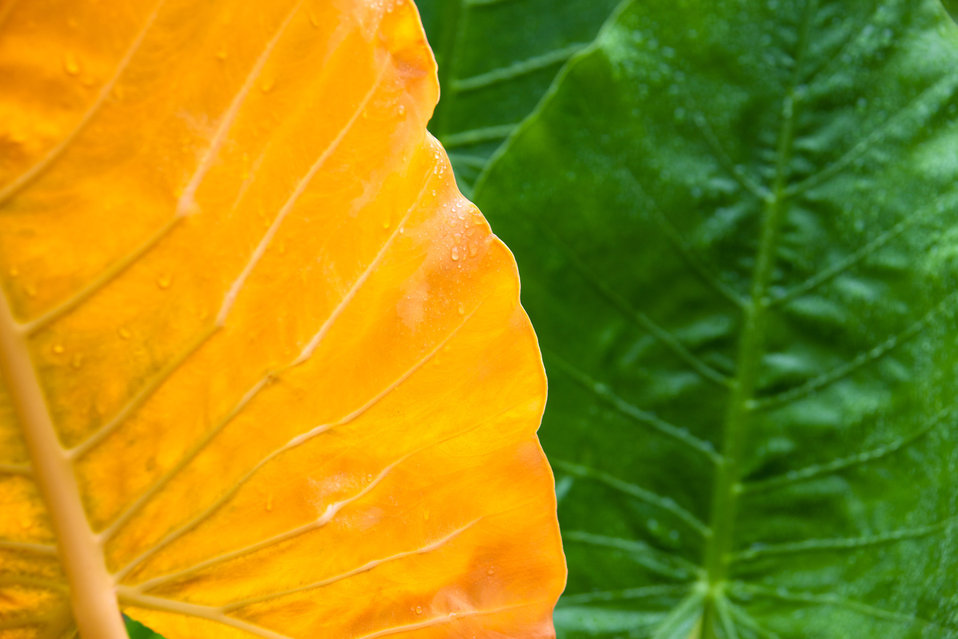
Wet yellow and green leaves background image.